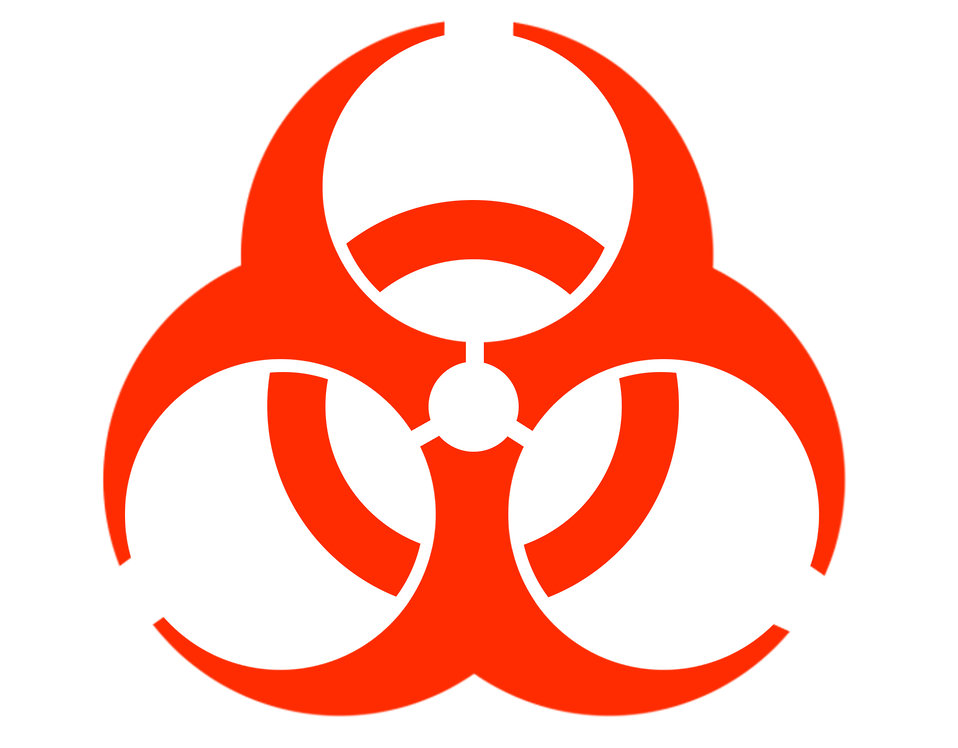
Biological hazard logo.